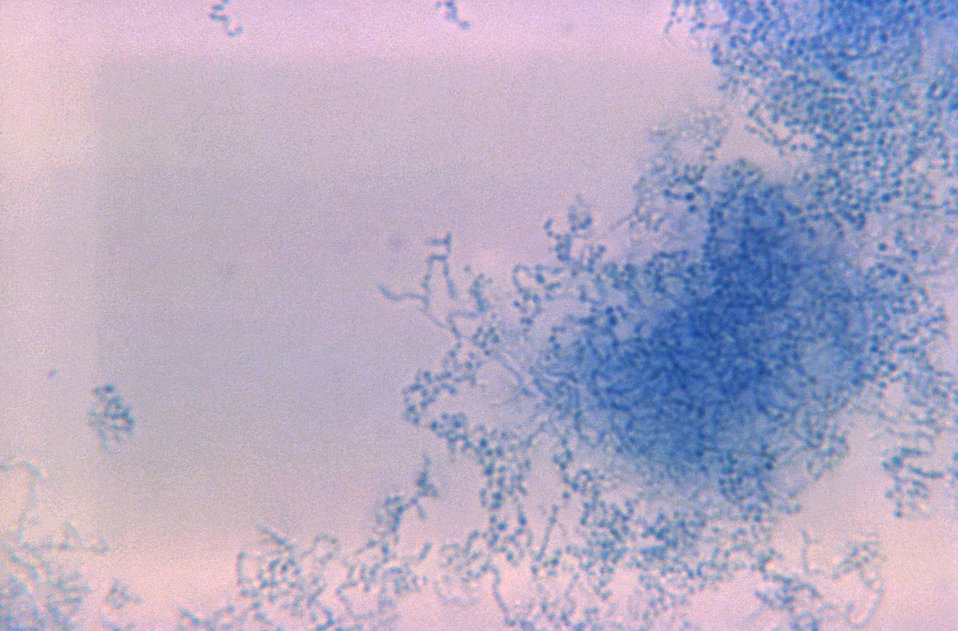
A photomicrograph of Nocardia asteroides grown in a laboratory culture.